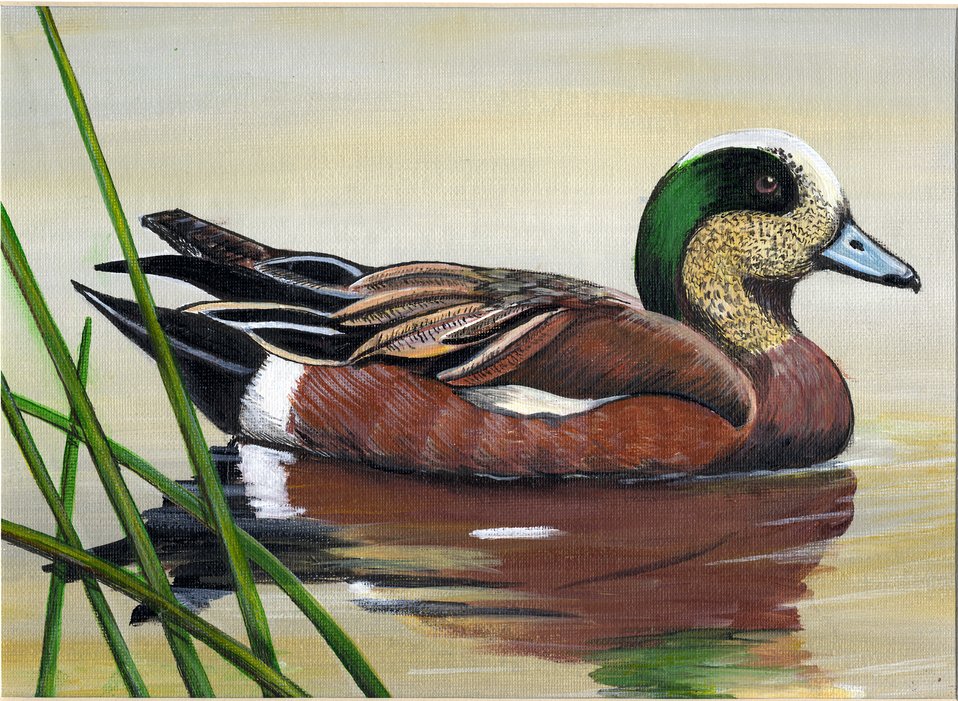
Mississippi

2012 Jr Duck Stamp Program
State Best of Show
Mississippi